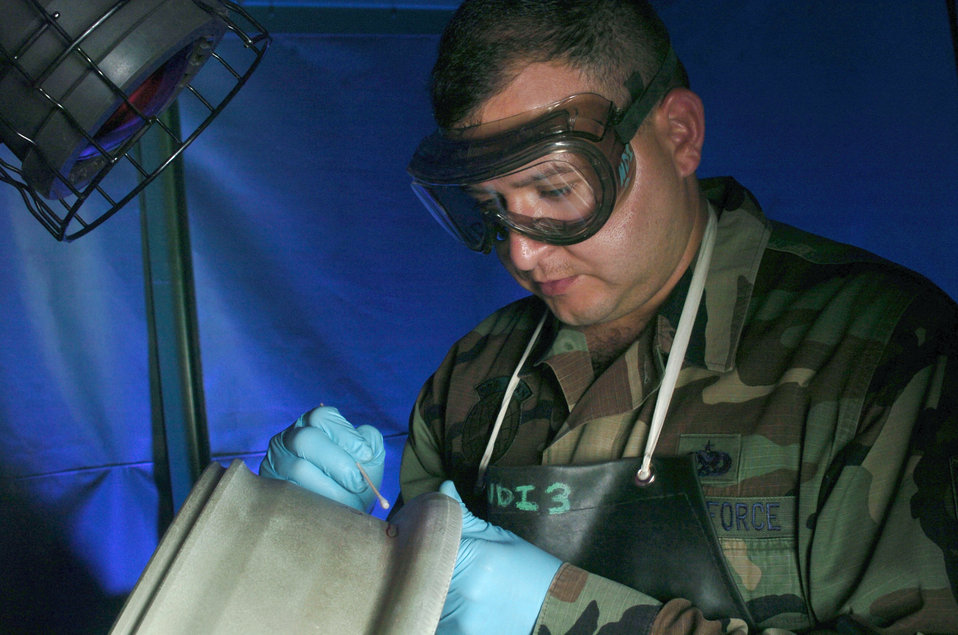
NDI technicians ensure aviation safety

YOKOTA AIR BASE, Japan -- Staff Sgt. Roland Hernandez checks a C-130 Hercules landing gear here. He is looking for cracks and hairline fractures on the component. Sergeant Hernandez is a nondestructive inspection technician assigned to the 374th Maintenance Squadron.